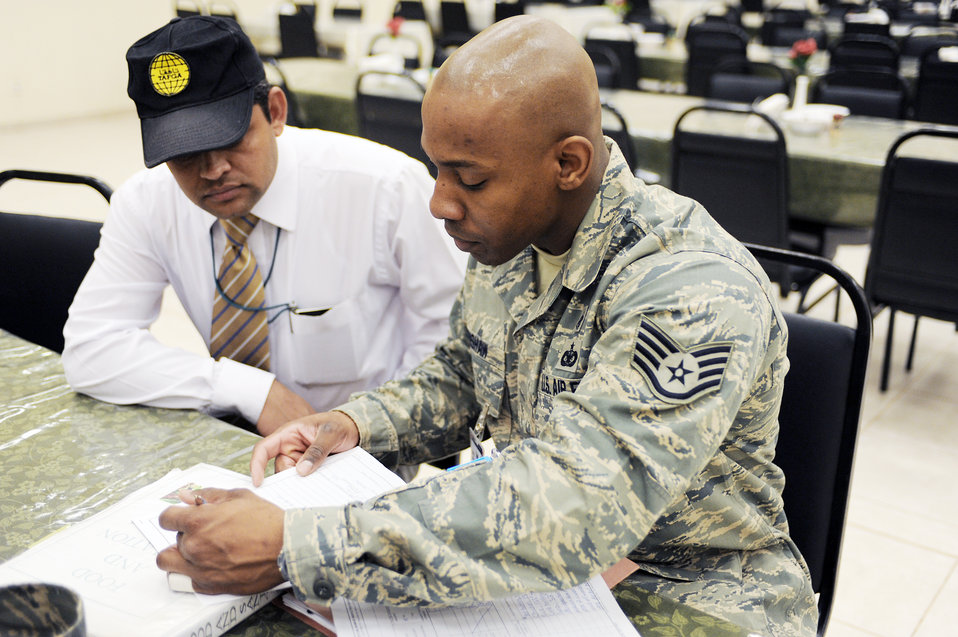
Airmen keep servicemembers healthy through preventative measures

Staff Sgt. William Crenshaw reviews comments with the manager of Dining Facility Two at Joint Base Balad, Iraq, March 23, 2010, after a successful inspection of the facility. Sergeant Crenshaw is the 332nd Aerospace Medical Squadron public health noncommissioned officer in charge and is deployed from Lackland Air Force Base, Texas.